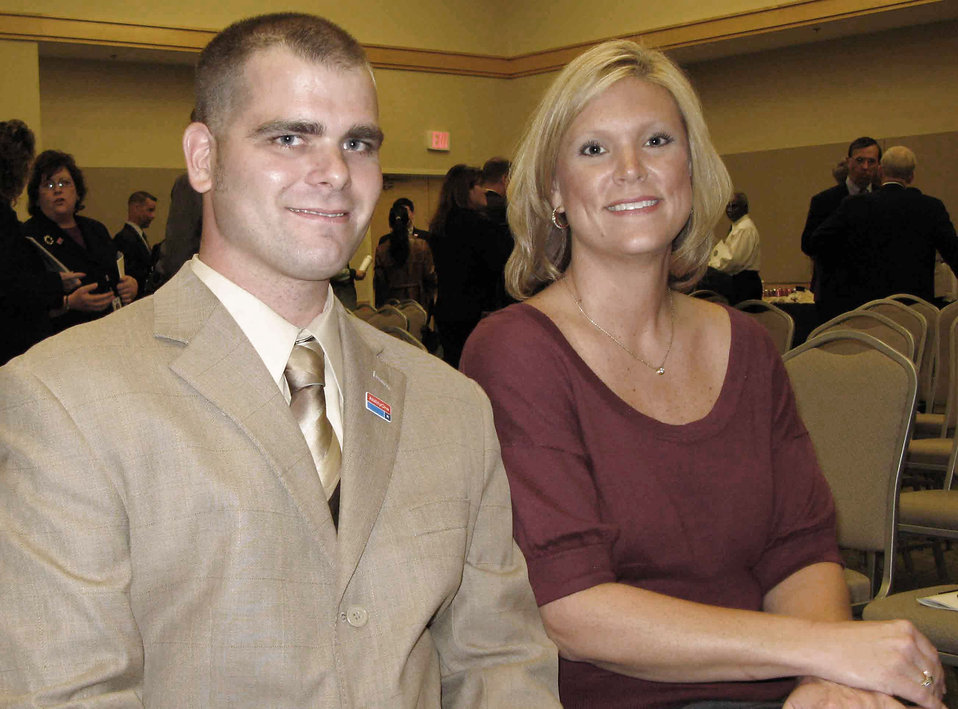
Disabled employee recognition

Former Army Spc. Nathan S. Short and his supervisor, Vicki Hoppes, attend a ceremony at the Pentagon Oct. 8 to recognize the contributions of disabled employees. Mr. Short is a medically-discharged Operation Iraqi Freedom veteran who was severely injured on April 20, 2004, during a truck accident in Kuwait. In 2006, he was hired for an AbilityOne-affiliated contracted position as a truck-fleet manager at Tinker Air Force Base, Okla.